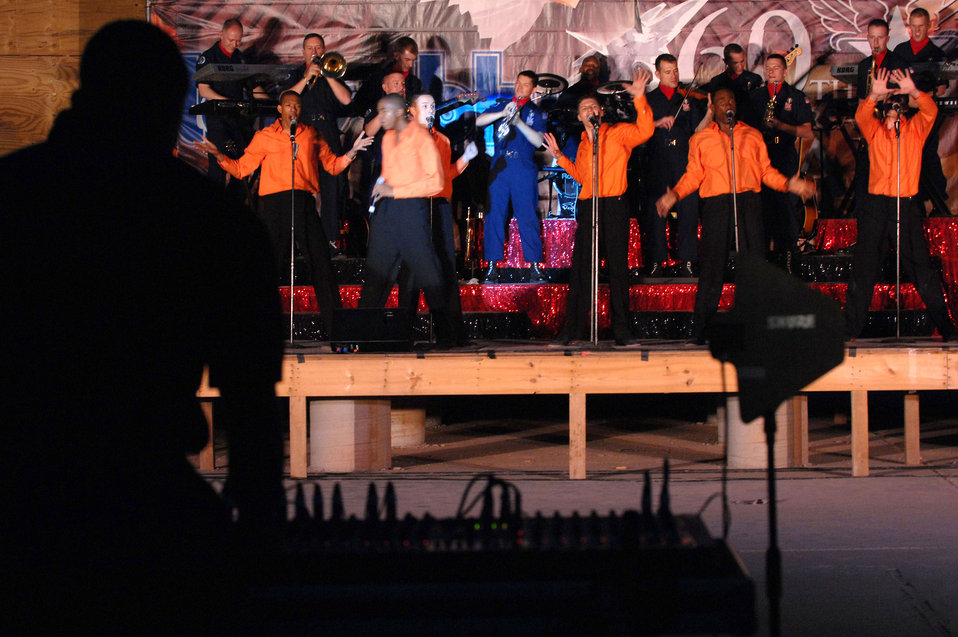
Tops in Blue perform for Airmen in Iraq

Tops in Blue members perform for Airmen and Soldiers April 26 at Kirkuk Air Base, Iraq. Tops in Blue's goal is to enhance mission productivity for Air Force members around the world. Tops In Blue Airmen perform an average of 120 performances at 100 locations worldwide each year.